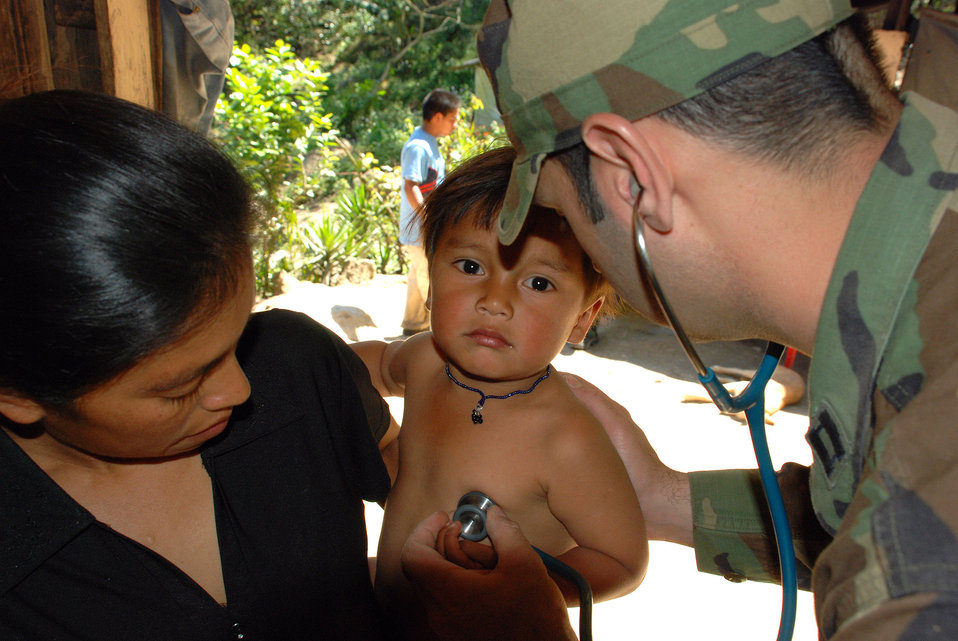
Medical team hikes into Honduran mountains to care for children

An Air Force physician's assistant conducts a physical examination of an 18-month old boy in the remote village of Marcala, Honduras. A team of 16 medical workers and dieticians traveled there from the United States to take part in a pediatric nutrition medical readiness training exercise, screening children and mothers for anemia and educating them on nutrition. The team partnered with specialists from the Honduran Ministry of Health and the medical element of Joint Task Force-Bravo, based at Soto Cano Air Base, Honduras.